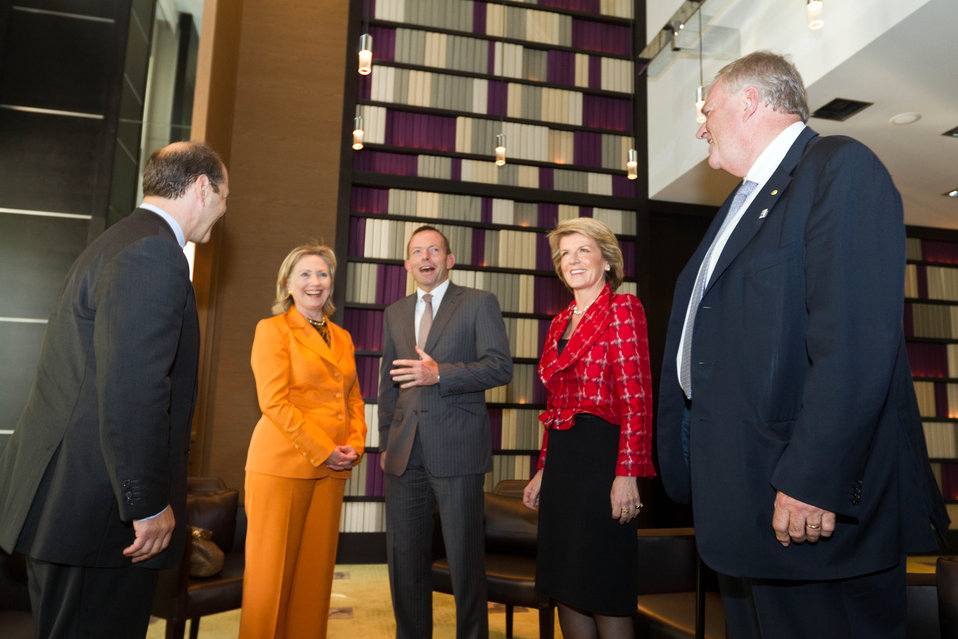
Ambassador Bleich, Secretary Clinton, Australian Opposition Leader Abbott, Australian Opposition Deputy Leader Bishop, and Australian Ambassador Beazley Meet

U.S. Ambassador to Australia Jeff Bleich, left, U.S. Secretary of State Hillary Rodham Clinton, second from left, Australian Opposition Leader Tony Abbott, center, Australia Opposition Deputy Leader Julie Bishop, second from right, and Australian Ambassador to the U.S. Kim Beazley, right, meet in the library at the Grand Hyatt in Melbourne, Australia, on November 7, 2010.